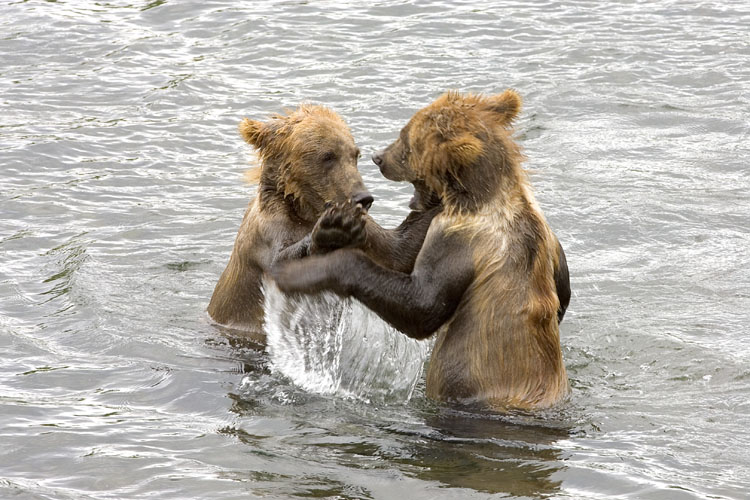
KOD Hildebrand (12)

Kodiak National Wildlife Refuge- Wildlife